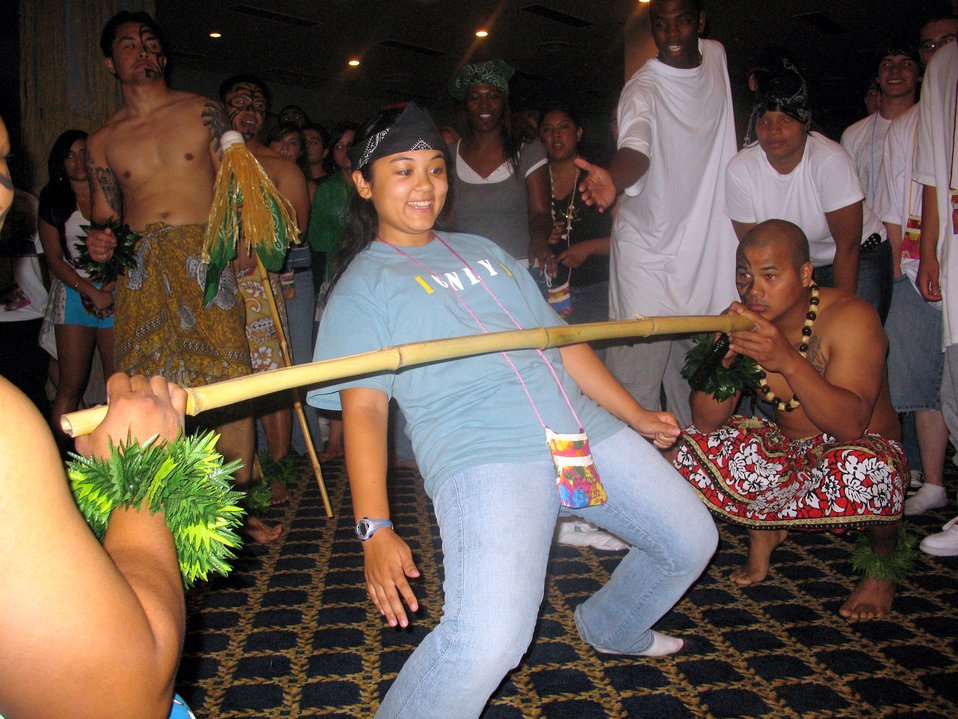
Yokota youths graduate safe and sound

Samantha Smith, a 2007 Yokota High School graduate, limbos during Project Graduation June 7. The event gave the graduates an opportunity to celebrate the milestone in a safe environment.